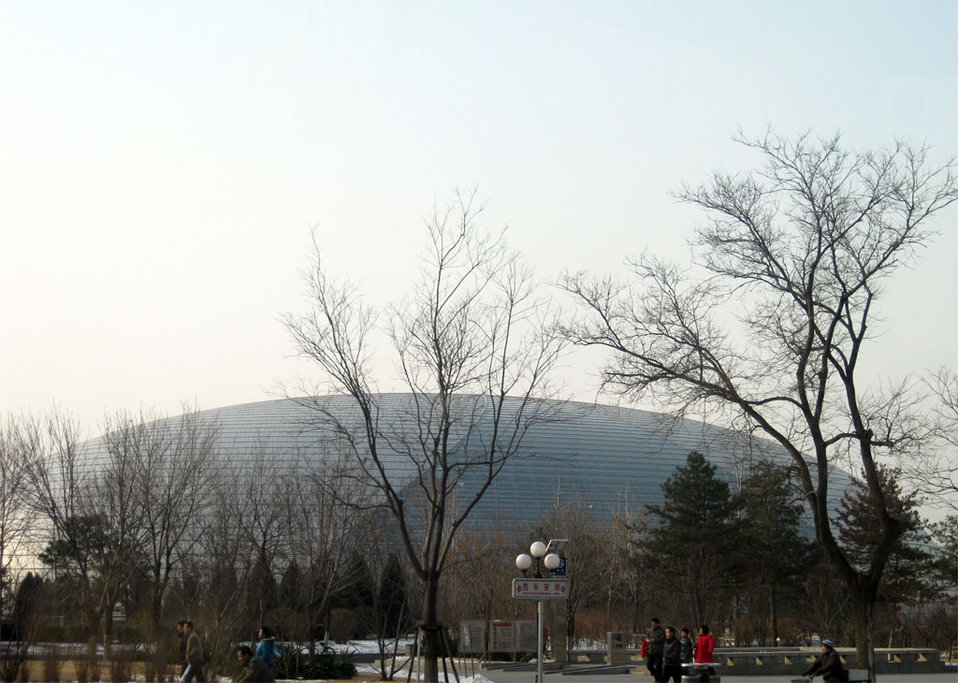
National Center for the Performing Arts

Behind the Scenes: The National Center for the Performing Arts as seen along the route to the Diaoyutai State Guesthouse in Beijing, China February 20, 2009.